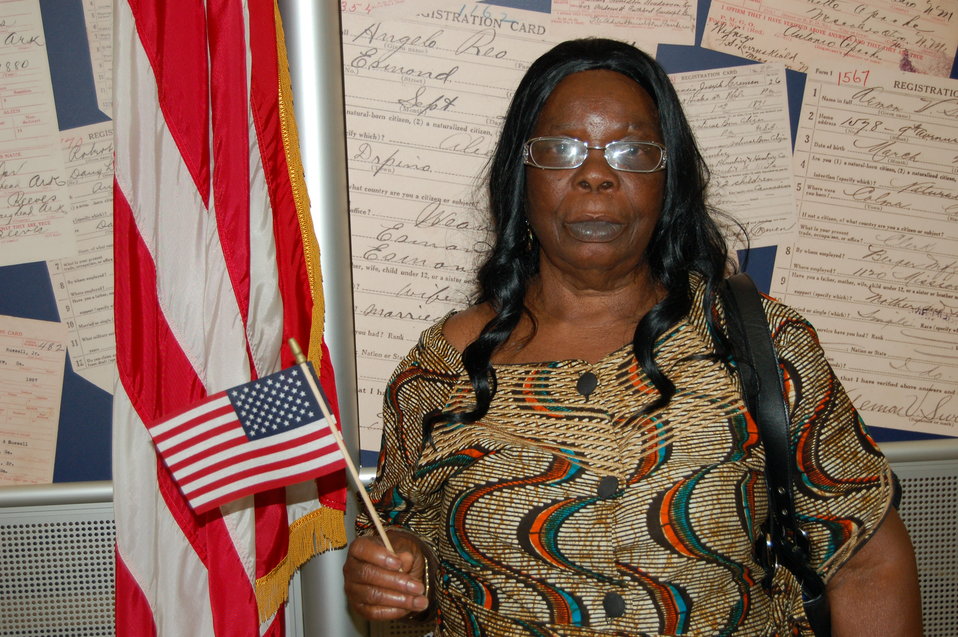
New Citizens